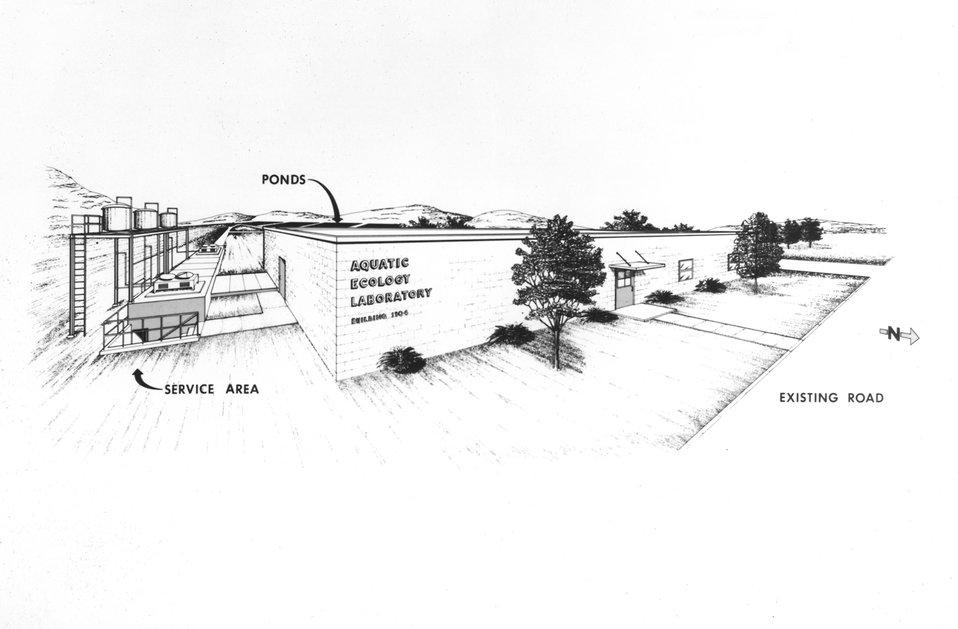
AQUATIC ECOLOGY LABORATORY...Architect's conception of the new Aquatic Ecology Laboratory under construction at Oak Ridge National Laboratory, Tennessee, for determining thermal effects on fish and other aquatic life. c. 1972